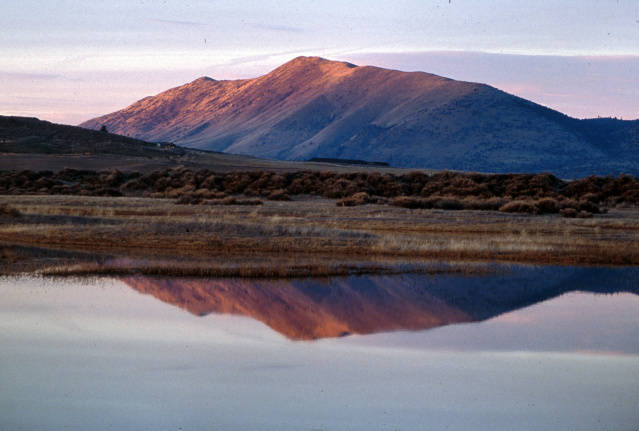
Wetland scene

Lower Klamath National Wildlife Refuge